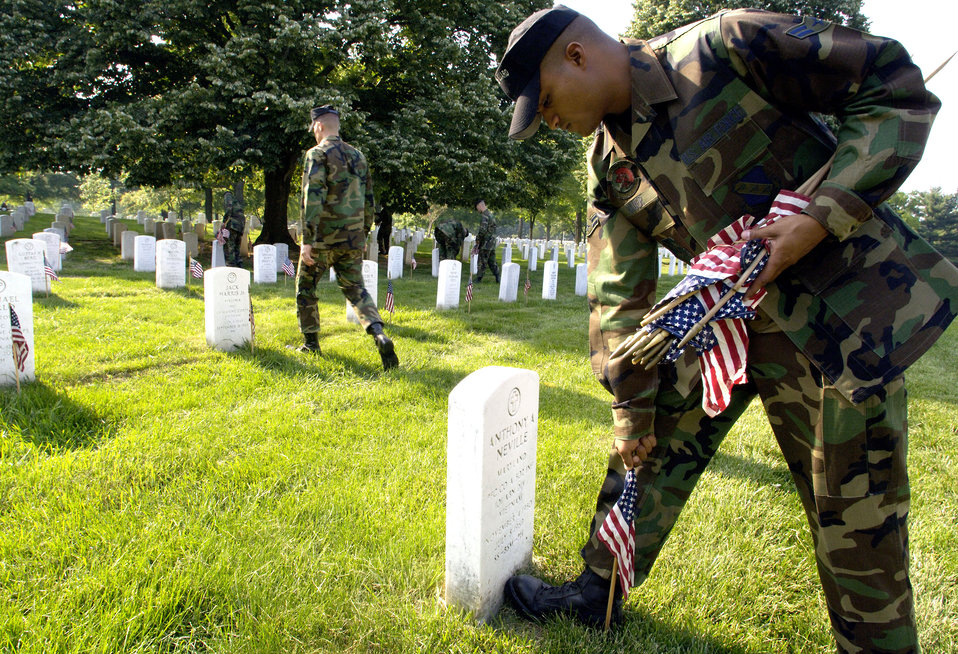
In remembrance

A member of the United States Air Force Honor Guard Drill Team places a flag in front of a headstone at Arlington National Cemetery on Thursday, May 25, 2006. Assigned to Bolling Air Force Base, Washington D.C., he joined hundreds of Soldiers, Sailors, Airmen and Marines from across the Washington D.C. area to place more than 227,000 flags at the front of headstones. The flags will remain at the headstones through Memorial Day.